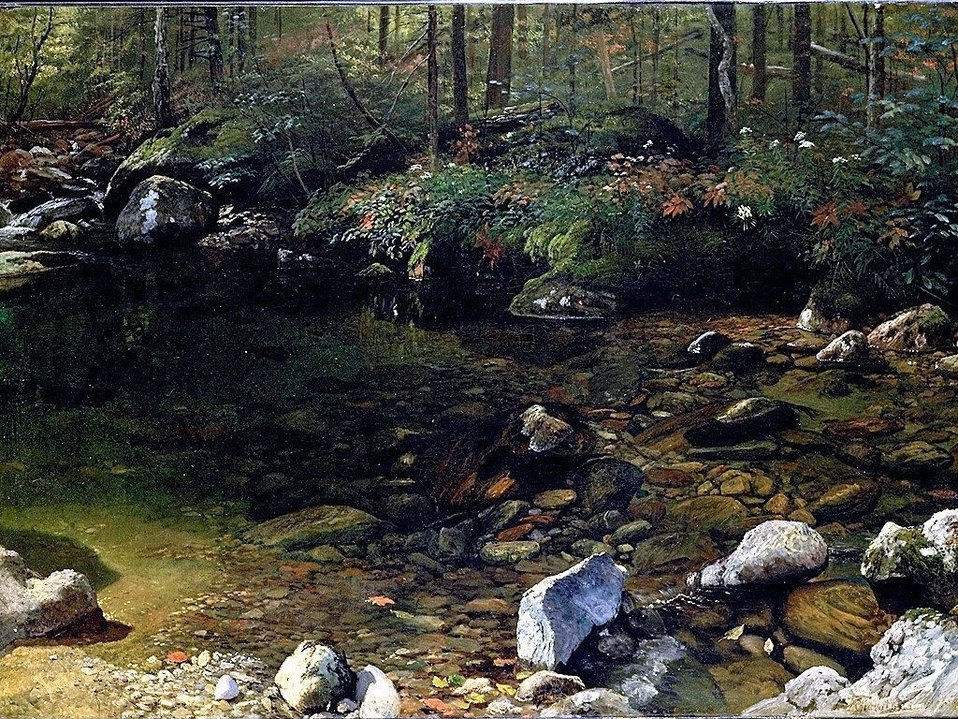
Albert Bierstadt - Shady Pool, White Mountains, New Hampshire